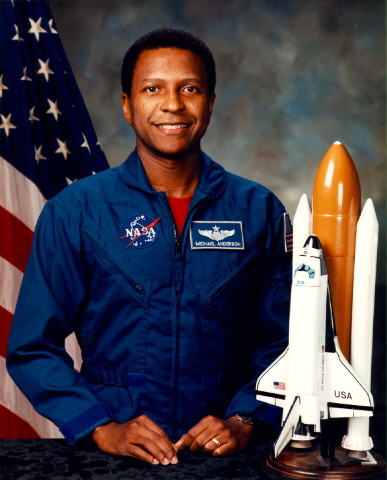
Michael P. Anderson, an African-American astronaut who died aboard the space shuttle Columbia in February 2003.